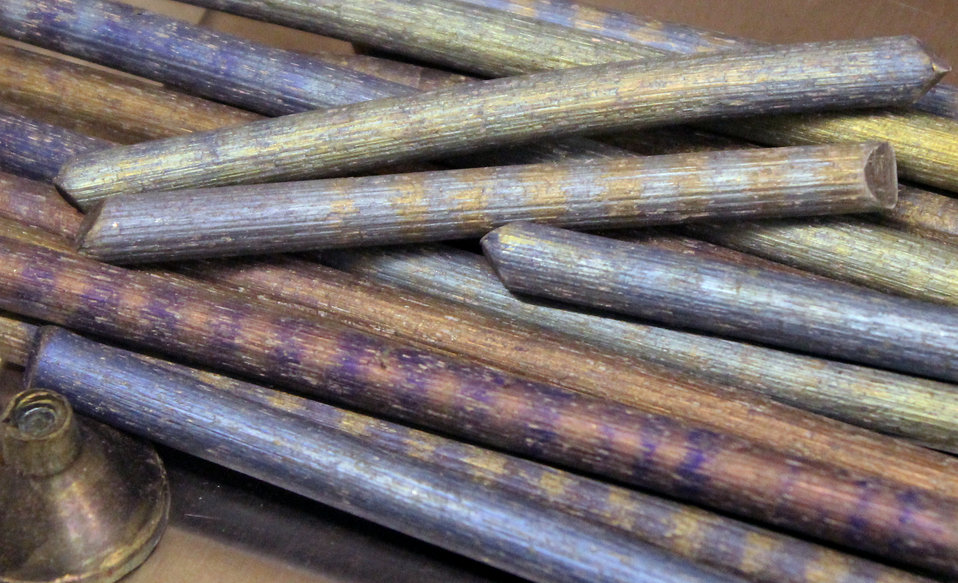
Extruded Europium (EU) metal.

EU metal, the colors arise from various levels of oxidation. The banding is from surface texture variation arising from the extrusion process.